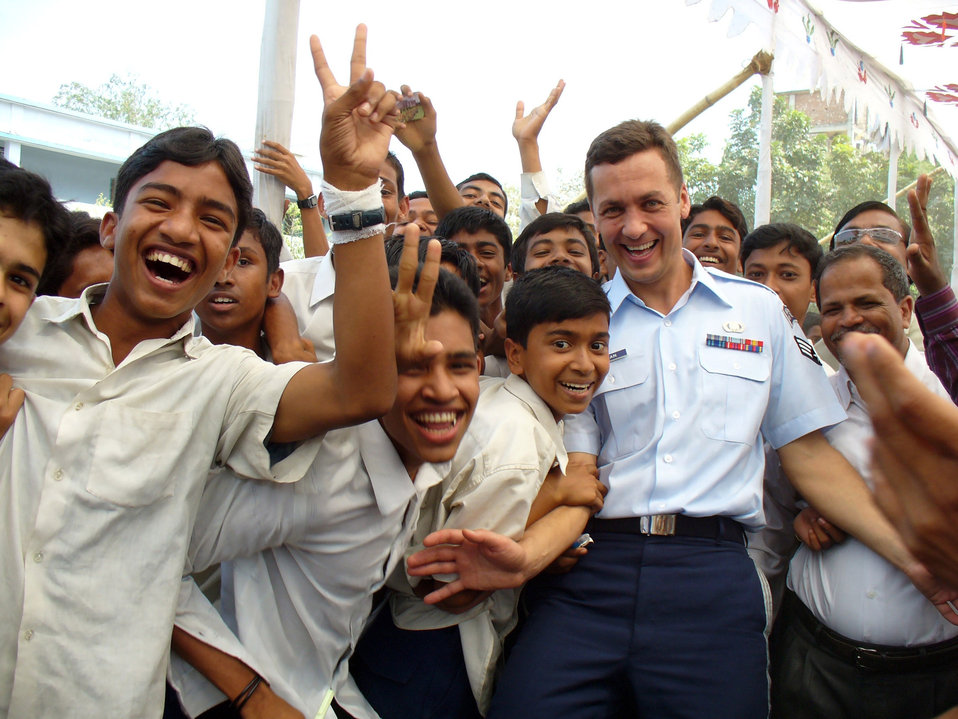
From Russian tanks to Air Force trombones

Senior Airman Vladimir Tchekan, recently promoted to staff sergeant, visits with school children while touring with the U.S. Air Force Band of the Pacific-Asia in Bangladesh earlier this year. The band played with the Bangladesh Armed Forces Band.